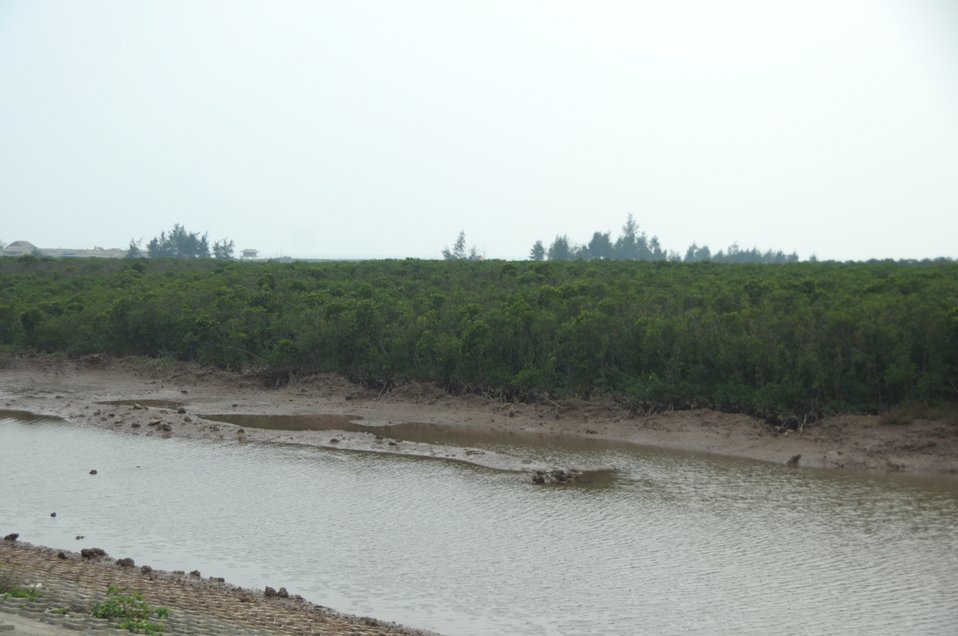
Mangrove forests in Nam Dinh Province.

Quat Lam, Nam Dinh. January 16, 2014.